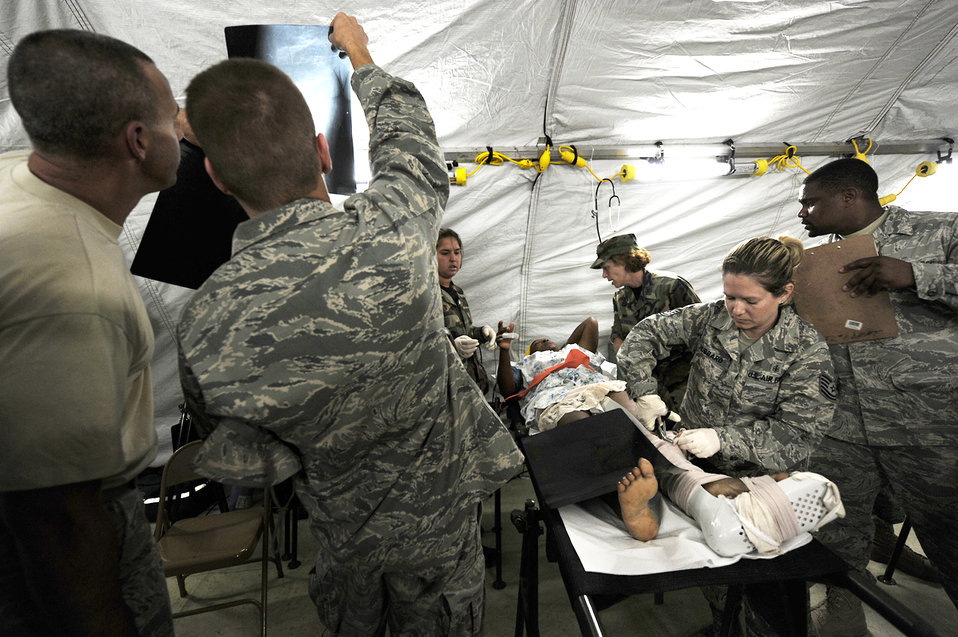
Airmen provide care, compassion to people of Haiti

Airmen from Travis Air Force Base, Calif., and Navy corpsman treat earthquake survivors at an expeditionary medical facility Feb. 3, 2010, located along the harbor of Port-au-Prince, Haiti. A 7.0-magnatude earthquake struck Haiti Jan. 12, leaving thousands of Haitians displaced and without access to food, water and vital medical care.